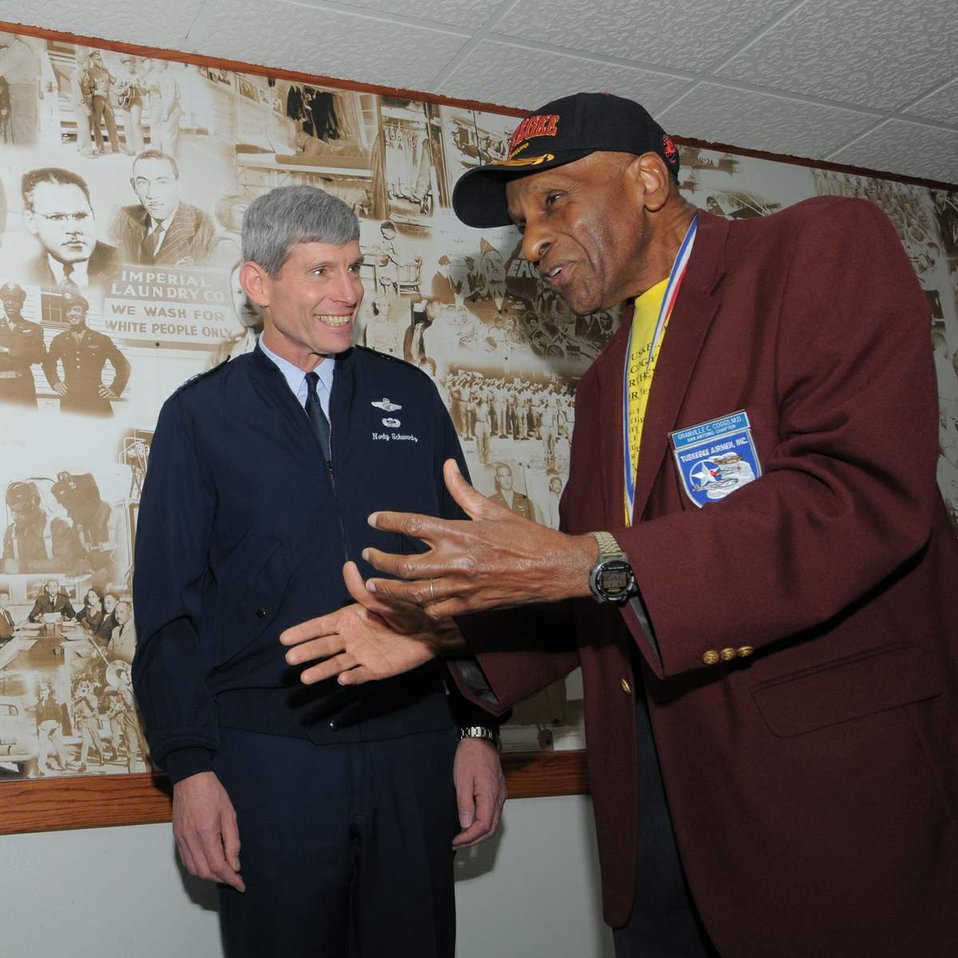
CSAF meets Tuskegee Airman

Air Force Chief of Staff Gen. Norton Schwartz visits with Dr. Granville Coggs Feb. 19 in front of the Tuskegee Airmen mural in the main corridor of the 99th Flying Training Squadron at Randolph Air Force Base, Texas. Dr. Coggs is a Tuskegee Airman who trained at Tuskegee Institute in the 1940s. The 99th FTS traces its roots back to the 99th Fighter Squadron, which was the first all-black unit in the Army Air Corps when it activated in May 1942.